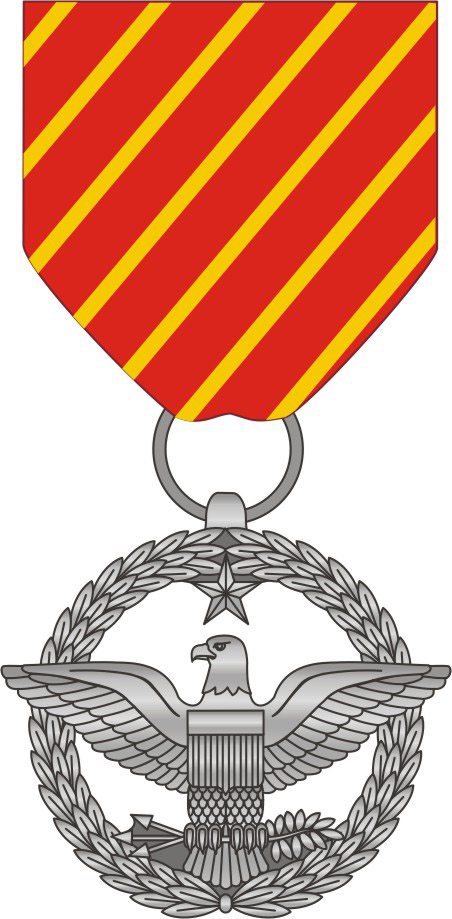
Air Force releases combat action medal criteria

Air Force combat action medal, front view.